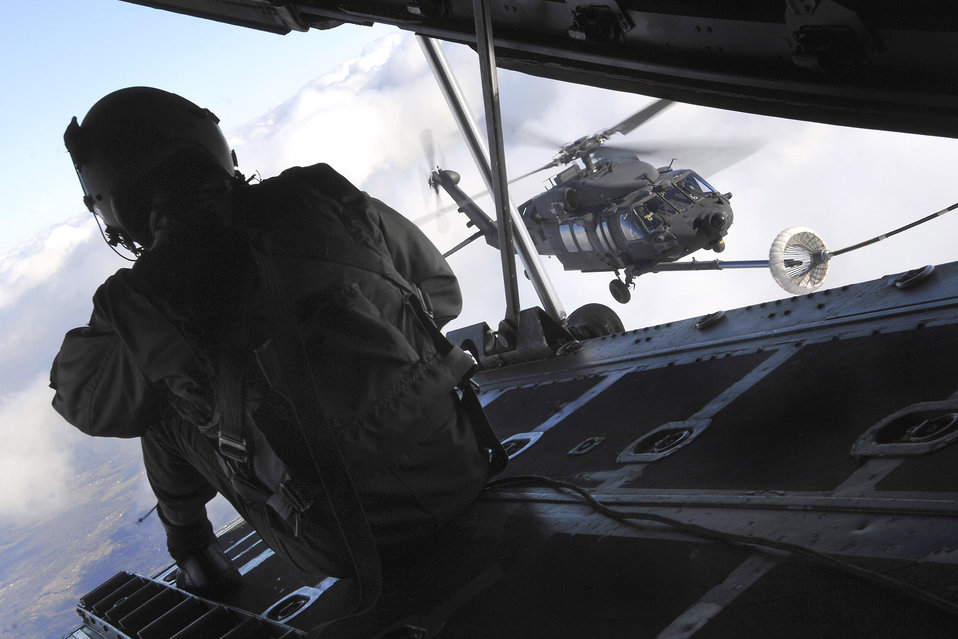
Easy does it

From the rear ramp of an HC-130, Staff Sgt. Jeremy Mayo observes an aerial refueling of a U.S. Army MH-60K Blackhawk helicopter Dec. 2 over Fort Campbell, Ky. He is a loadmaster with the 9th Special Operations Squadron.